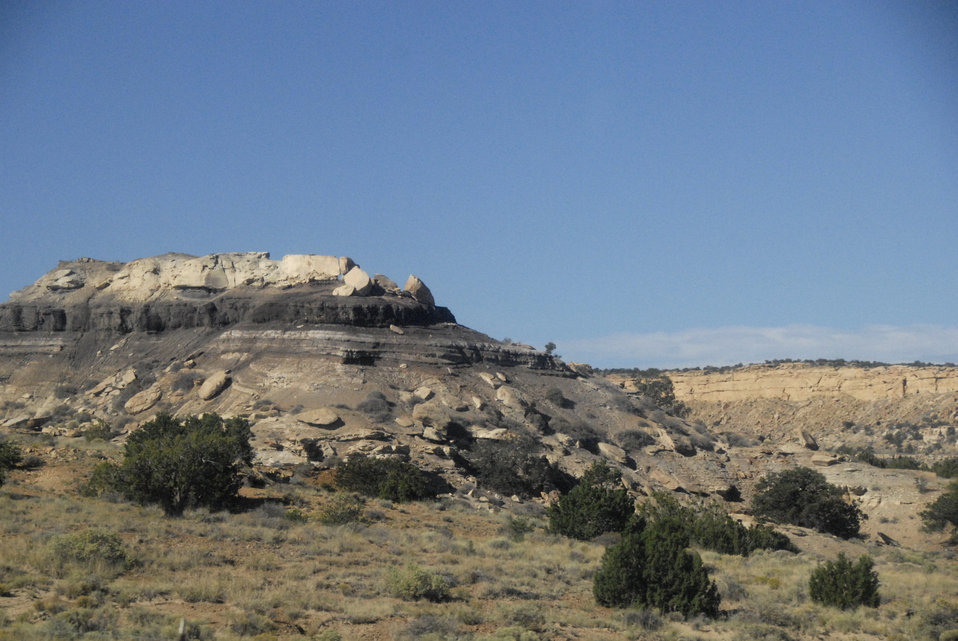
Impressive rock formations were visible while traveling along interstate US 40 in New Mexico on September 9, 2008.